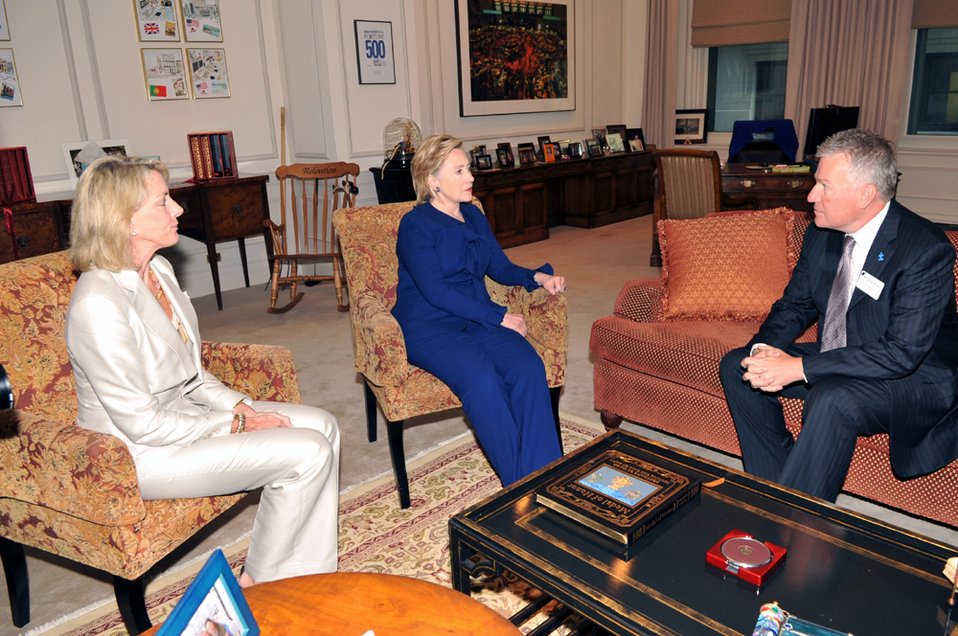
UNGA 2009: Secretary Clinton Meets With New York Stock Exchange CEO

U.S. Secretary of State Hillary Rodham Clinton meets with New York Stock Exchange (NYSE) Chief Executive Officer Duncan Niederauer at the NYSE during the 64th Session of the UN General Assembly in New York City, New York September 21, 2009.